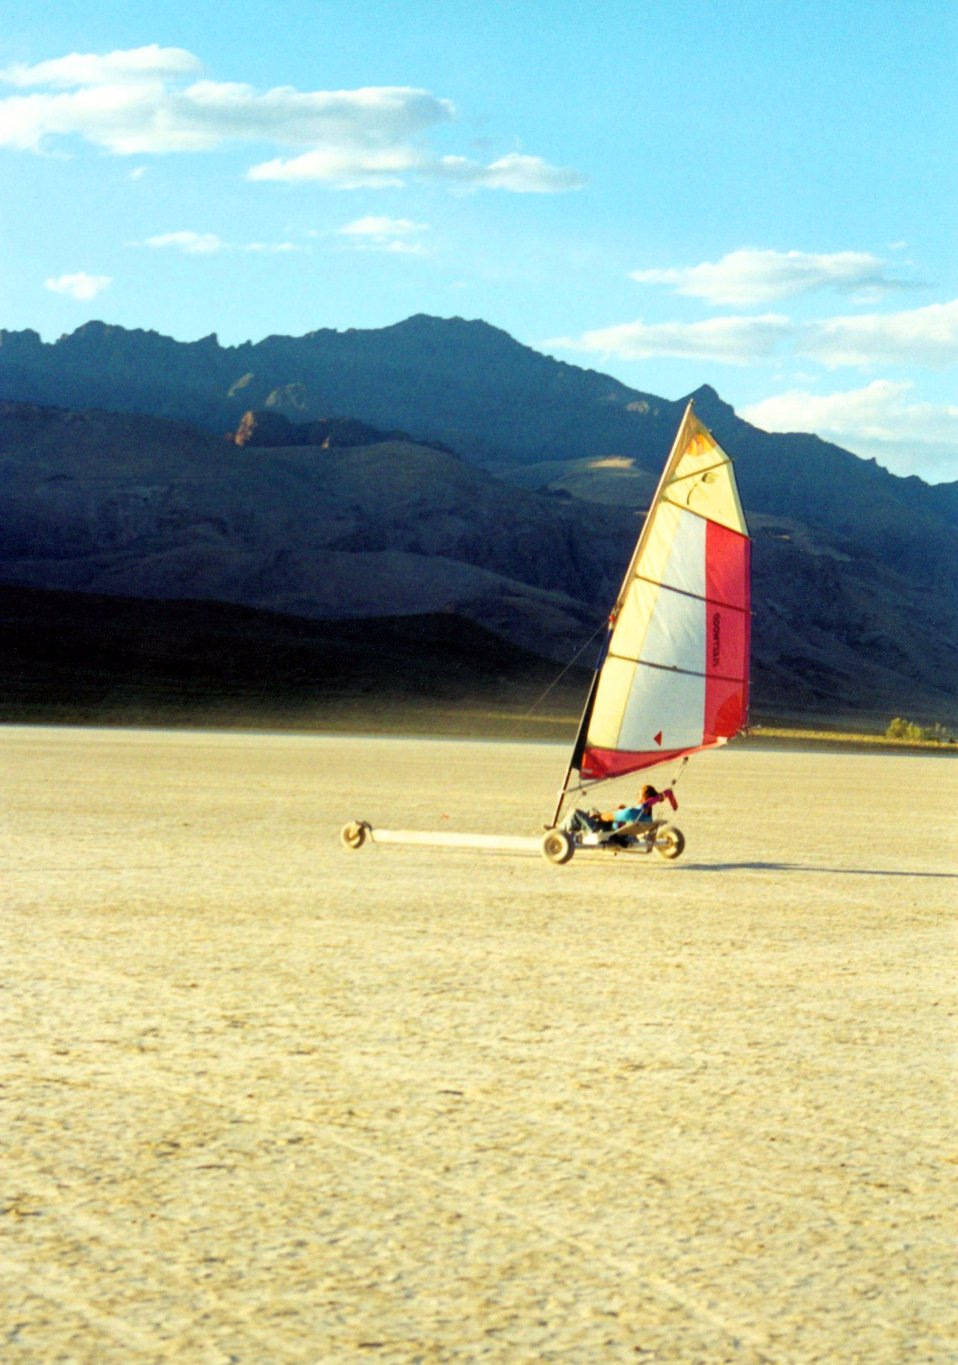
Sand Saling on the Alvord Desert in eastern Oregon.